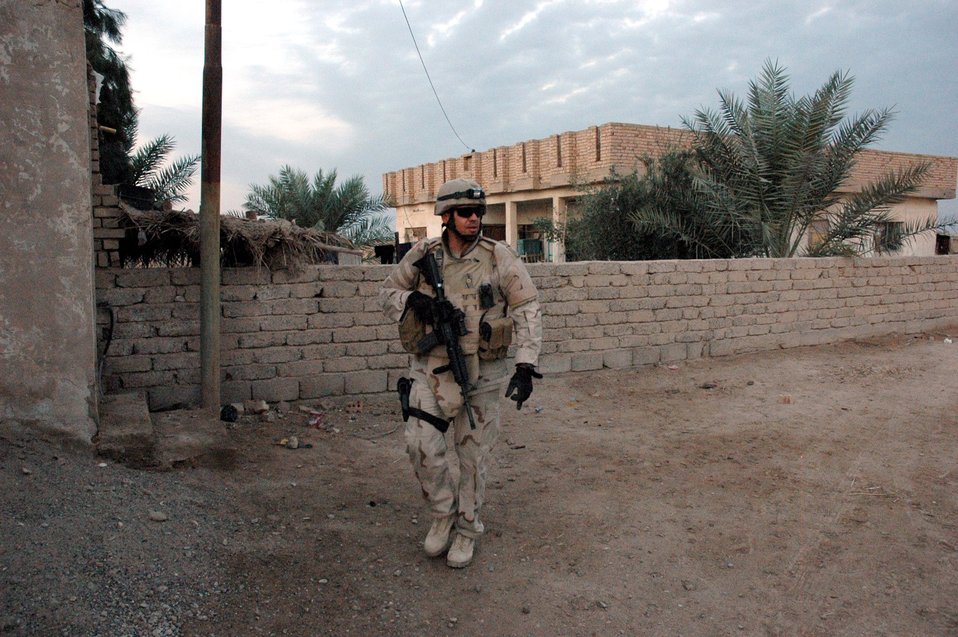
EOD sergeant receives Bronze Star Medal

Then Tech. Sgt. David Larriva patrols for bombs and unexploded ordnance in Baqubah, Iraq, during his deployment in support of Operation Iraqi Freedom. Now a master sergeant, he received a Bronze Star Medal for his work while deployed.